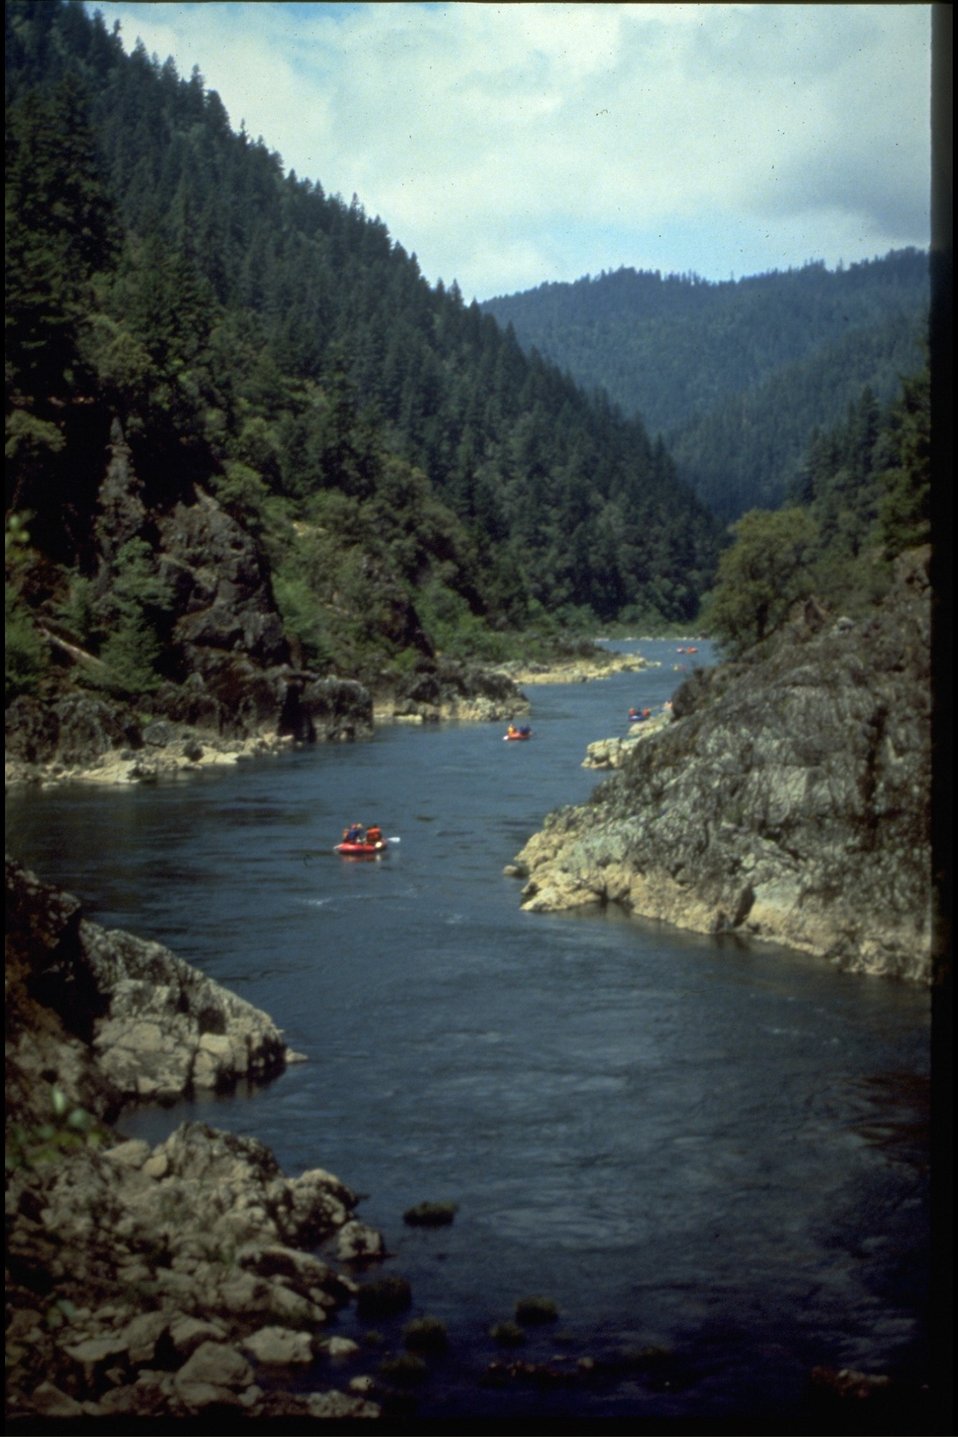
Rafting on wild section of the Rogue River.